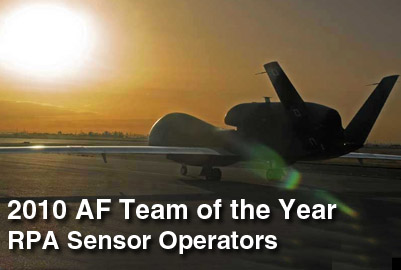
2010 AF Team of the Year